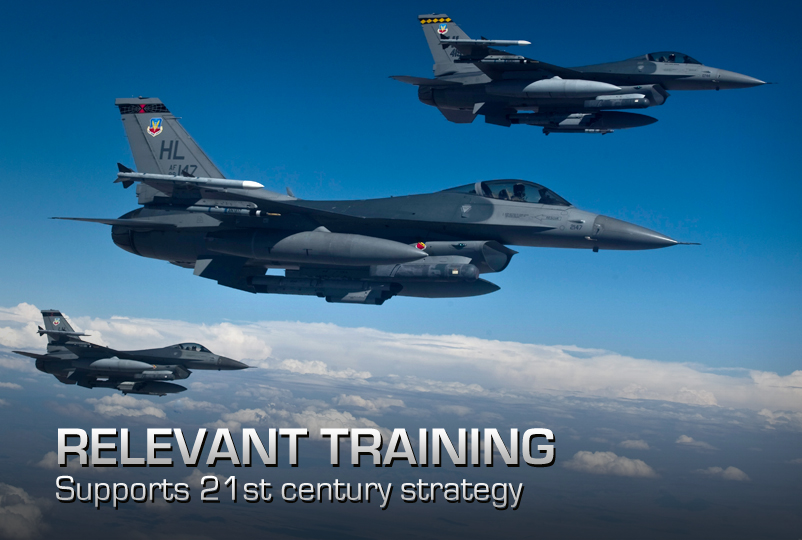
Relevant Training